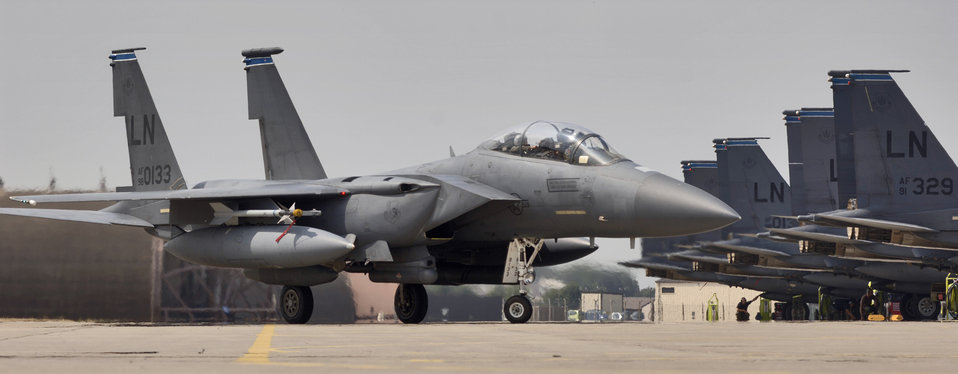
Lakenheath Strike Eagles return from Bulgaria

F-15E Strike Eagles taxi to their parking spaces at Royal Air Force Base Lakenheath, England, on Friday, July 28. The 492nd Fighter Squadron jets were returning home from a two-week deployment to Graf-Isnatievo Air Base, Bulgaria, where they took part in exercise Immediate Response, which began July 17. Airmen from the 48th Fighter Wing provided support at the joint, trilateral exercise with the Bulgarian and Romanian militaries and U.S. Soldiers. The Airmen practiced ground attack and air-to-air tactics.